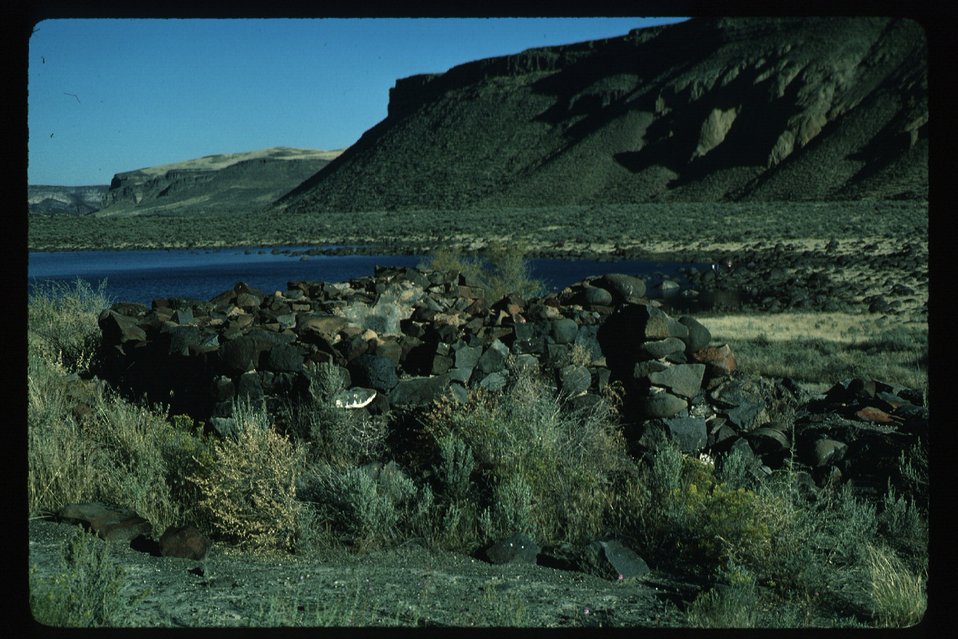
Stone Structure at Halverson Bar Archeology LSRD Lower Snake River District